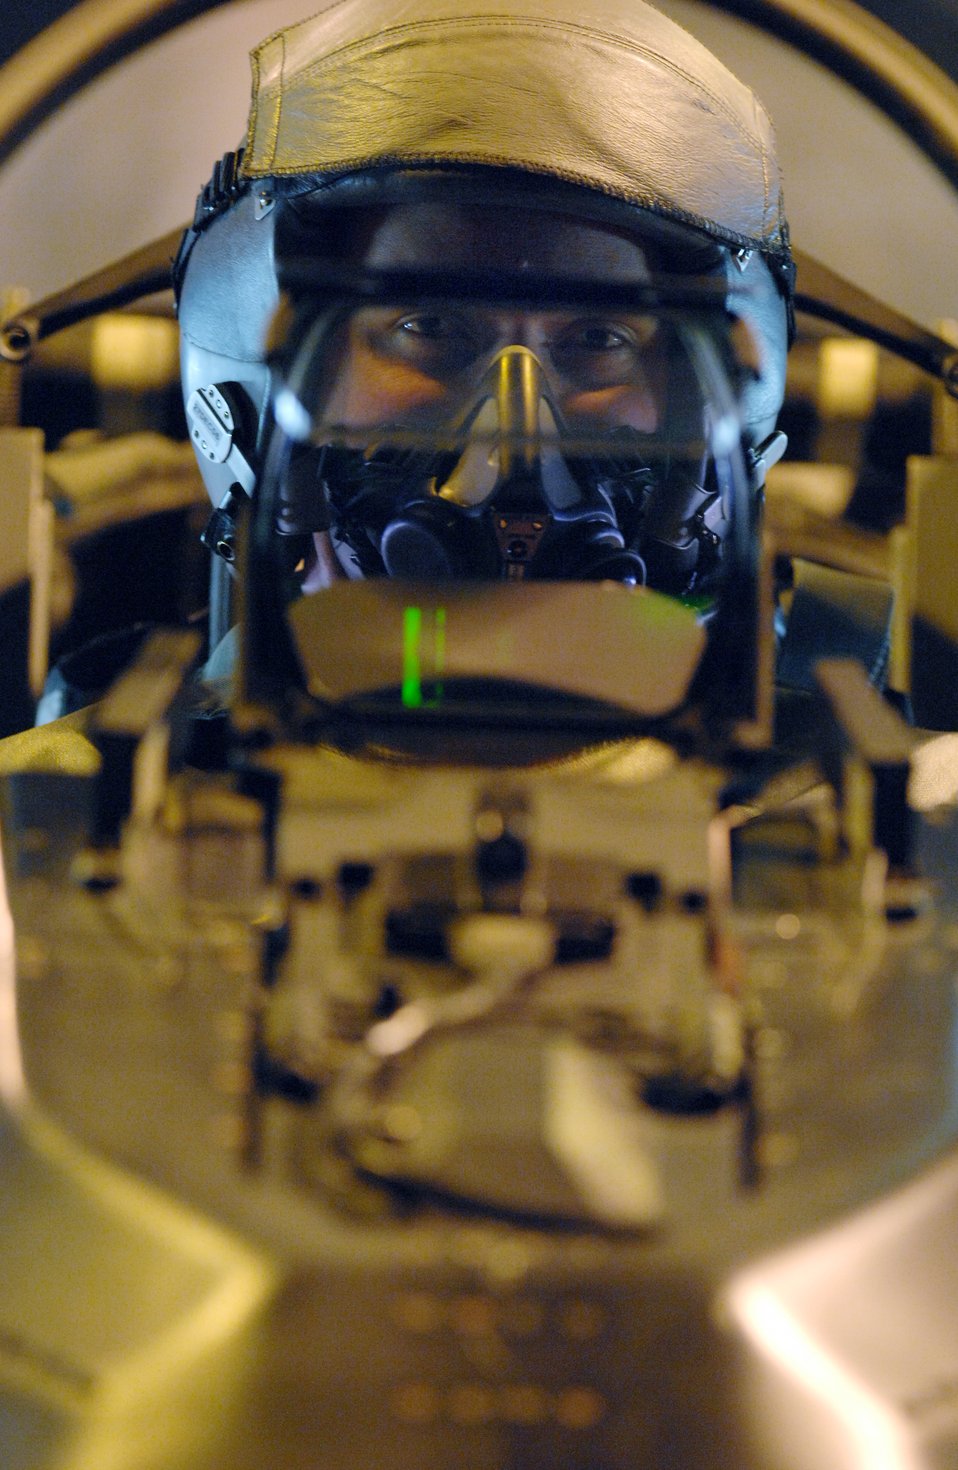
Pilot incentive pay

1st Lt. Aaron Johnson conducts a preflight inspection Nov. 29 in his F-16 Fighting Falcon. The fiscal 2007 Aviator Continuation Pay Program is being offered to eligible pilots and air battle managers for $25,000 and $15,000 respectively. Applications must be submitted no later than midnight Sept. 30, 2007. Lieutenant Johnson is with the 555th Fighter Squadron at Aviano Air Base, Italy.